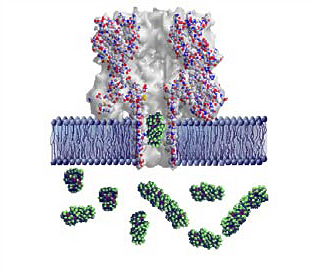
DNA; Nanoscale Pores

Graphic showing a lipid bilayer membrane (blue) with an alpha-hemolysin nanopore. A polyethylene glycol molecule (green globular structure) is transiting the pore; others are in solution on one side of the membrane. The colored spheres represent individual atoms, and are approximately 0.5 nanometers in diameter, or one-twenty-thousandth the width of a human hair.